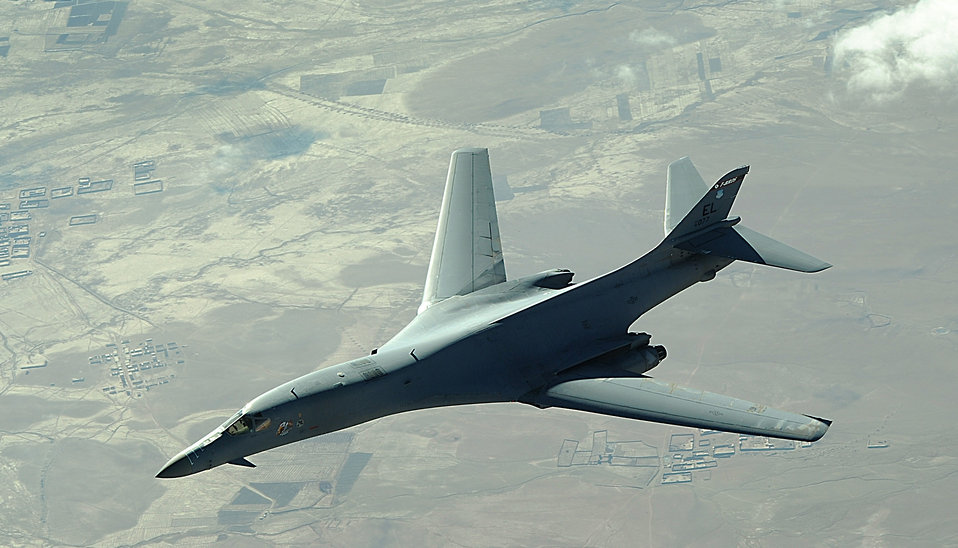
March 11 airpower summary: B-1Bs disrupt enemy plans

A B-1B Lancer flies a combat patrol mission over Afghanistan recently. B-1Bs fly close-air-support missions for both Operation Enduring Freedom and Operation Iraqi Freedom. The B-1B is assigned to the 34th Expeditionary Squadron.